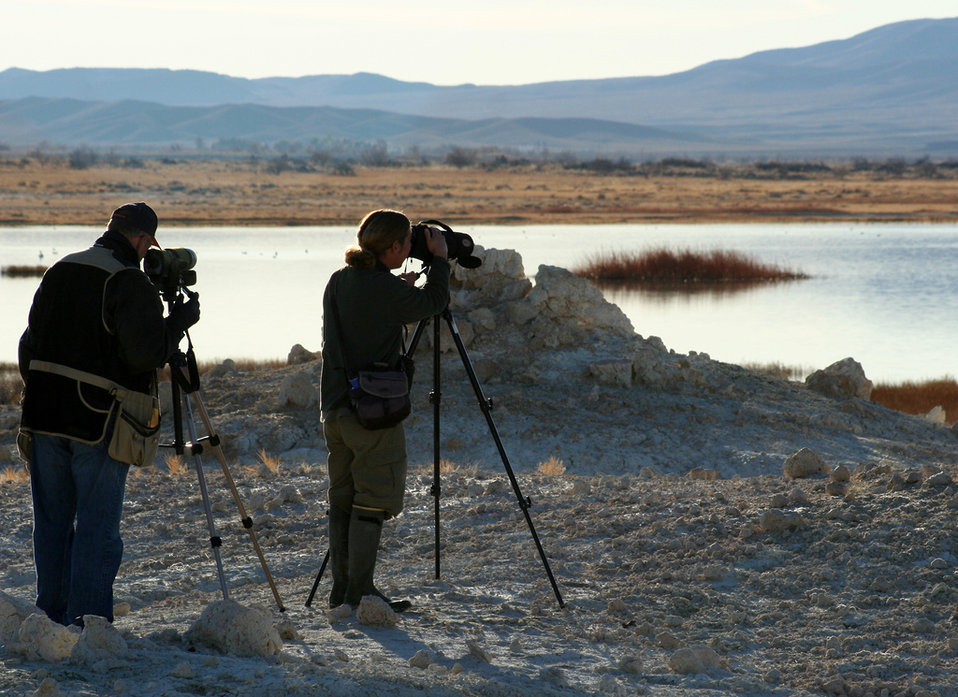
2009 Christmas Bird Count

Birders participate in the 2009 Christmas Bird Count at Ash Meadows National Wildlife Refuge